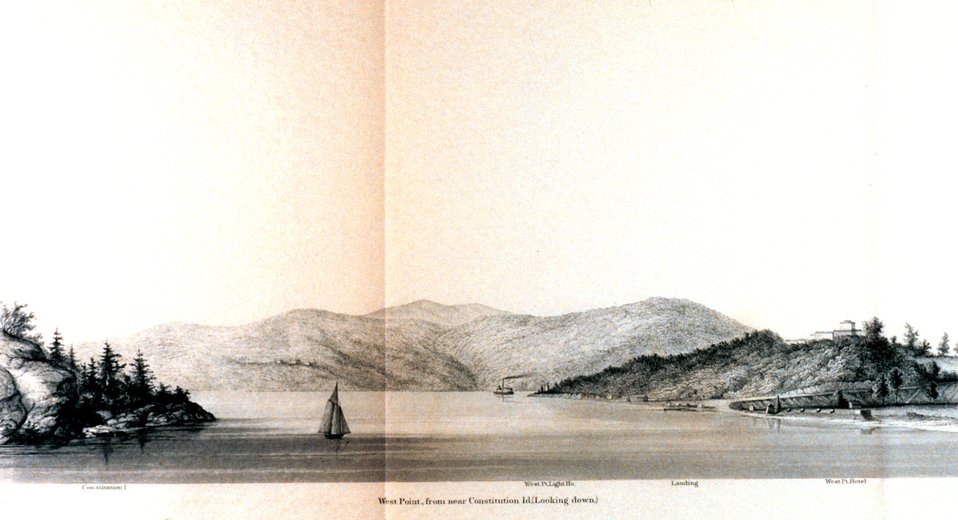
West Point from near Constitution Island looking down. On the Hudson River. In : Atlantic Local Coast Pilot Sub-Division 13 South Coast of Long Island New York Bay and Hudson River 1880. P. 602. Library Call Number VK981.A3 1879 Sub-13 2nd ed. 1880.